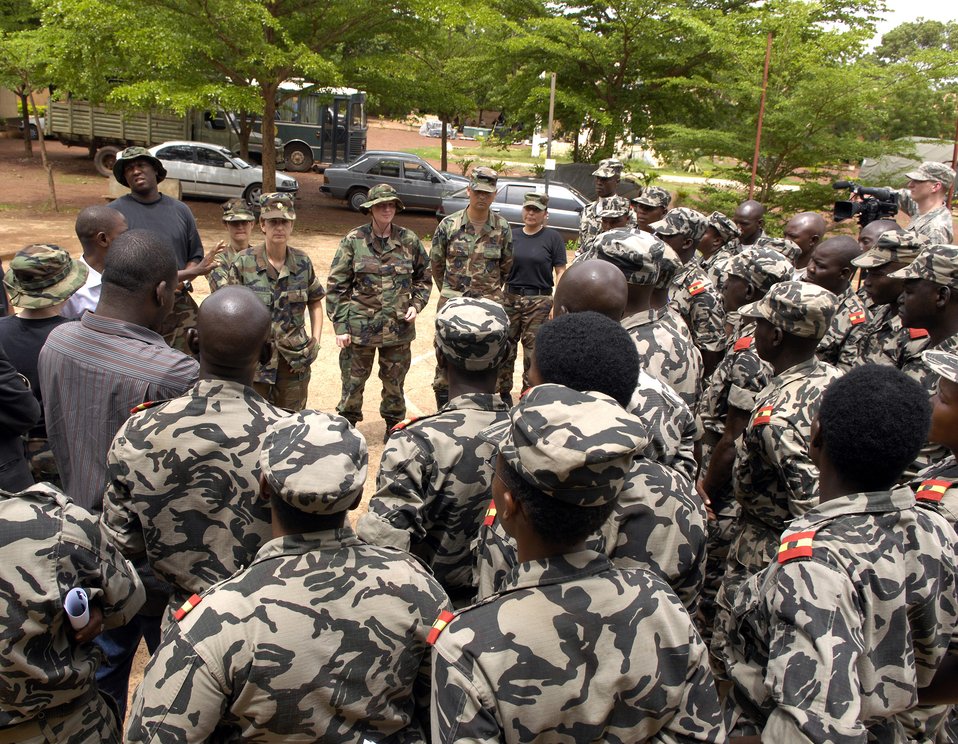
Malians learn life-saving medical techniques

Maj. Linda Demary and other Airmen and Sailors teach Malian medical professionals about handling mass casualties during MEDFLAG 08, July 15. Major Demary is a nurse deployed from the 31st Medical Group, Aviano Air Base, Italy.